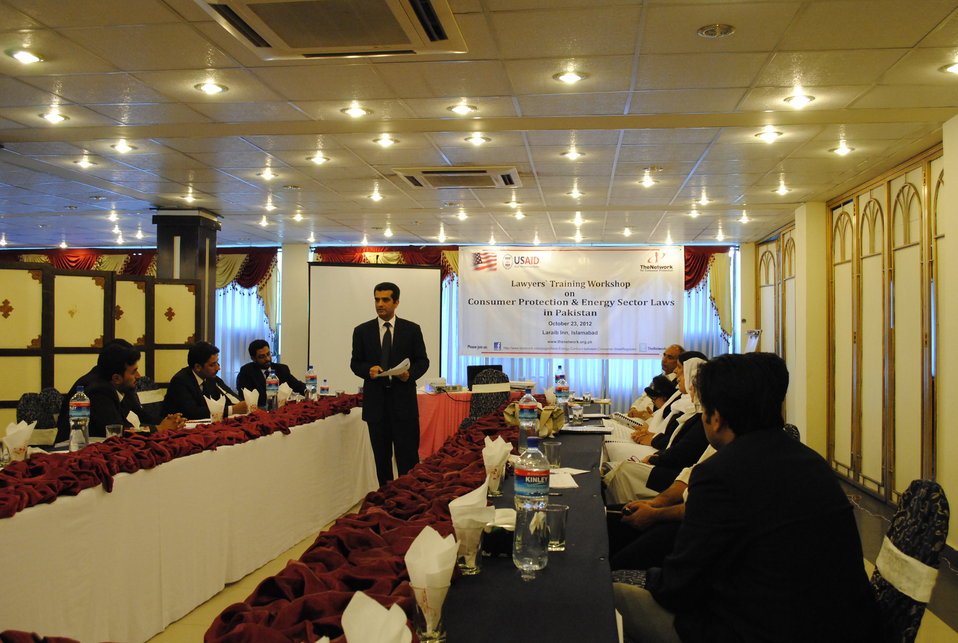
Caption 20 - TheNetwork - Islamabad - Laywers Training on Consumers Protection and Energy Sector Laws

The Network for Consumer Protection recently completed a project on energy sector reforms under USAID’s Citizens’ Voice Project. Their initiative was centered on consumer rights, consumer education and consumer litigation. Capacity building of lawyers in understanding consumer rights and energy sector laws was an essential part of their project to ensure that lawyers would be able to able to handle such cases effectively. This picture shows lawyers being trained by The Network.